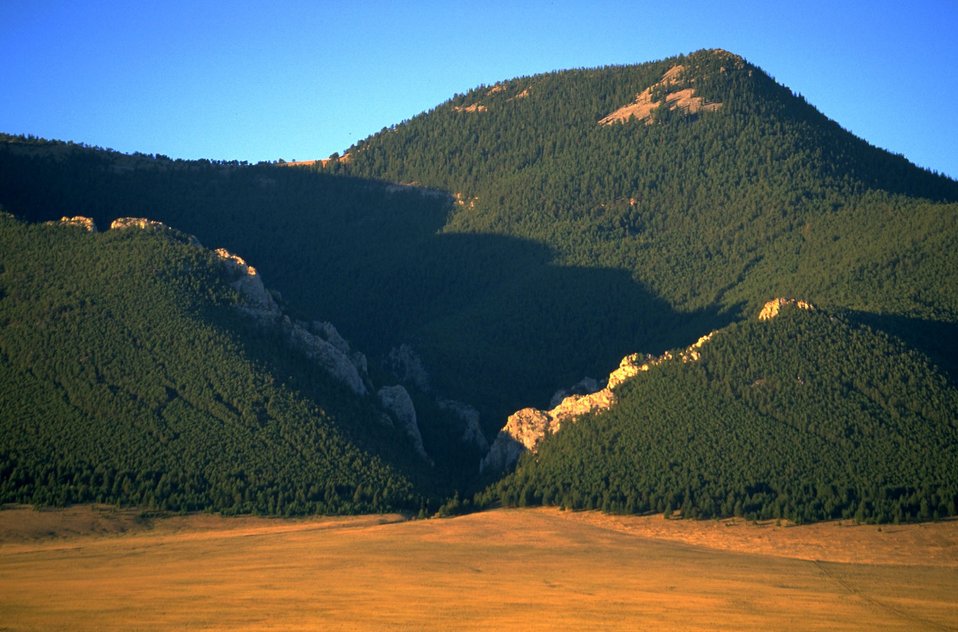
View of valley with mountains in background